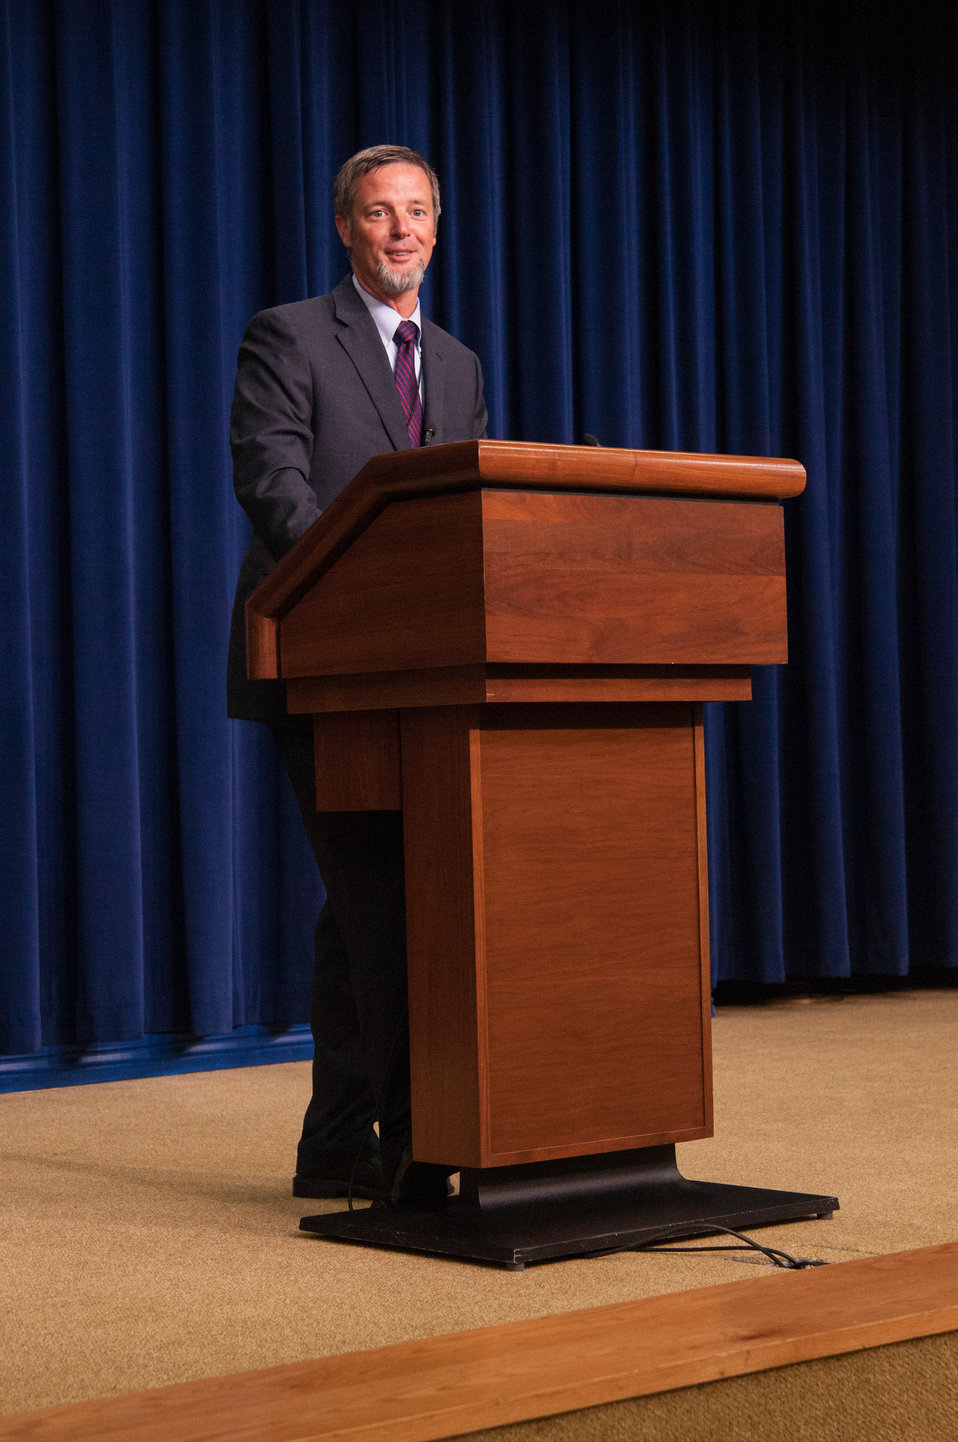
White House Domestic Policy Council Senior Policy Advisor for Rural Affairs Doug McKalip speaks at a meeting of the White House Rural Council to an audience of the State President’s Conference of the FFA on Wednesday, Jul. 24, 2013 in Washington, D.C. McKalip discussed White House Initiatives for rural America and thanked the FFA National Presidents for their efforts.